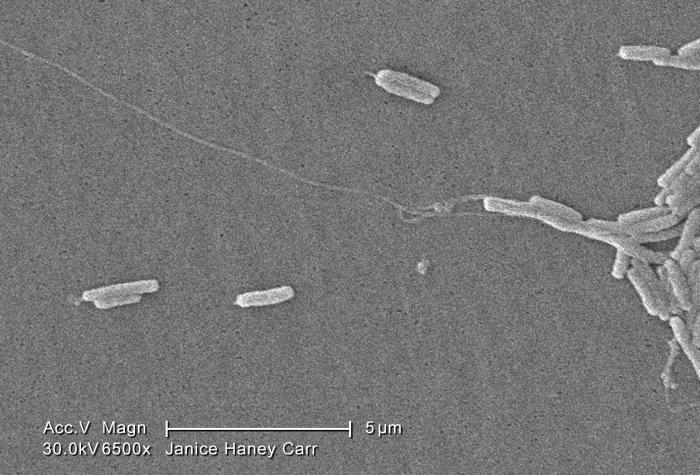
Under a very moderately-high magnification of 6500X, this scanning electron micrograph (SEM) depicted a number of Gram-negative Legionella pneumophila bacteria. Please see PHIL 11092 through 11152 for additional SEMs of these organisms, specifically PHIL 11144 for a colorized version of this image. Of particular importance, is the presence of polar flagella, and pili, or long streamers, which due to their fragile nature, in some of these views seem to be dissociated from any of the bacteria. For a better view of these bacterial appendages, see the colorized version.